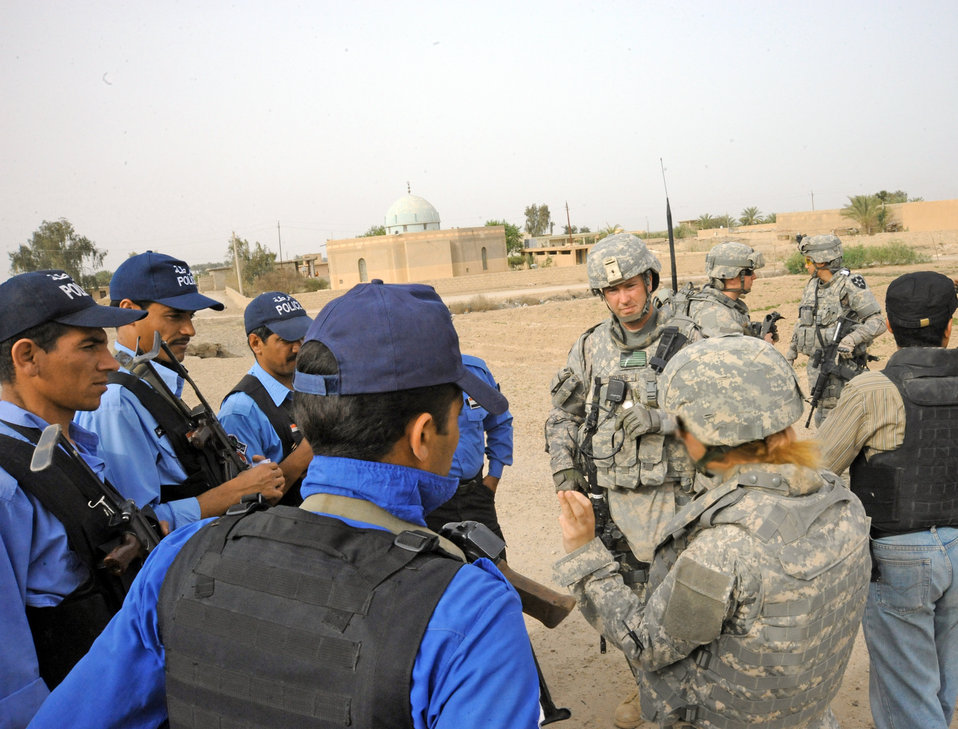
Security forces help promote Iraqi community policing

Members of the 732nd Expeditionary Security Forces Squadron Det. 2 discuss the joint presence patrol April 4, 2010, near Rufush, Iraq.